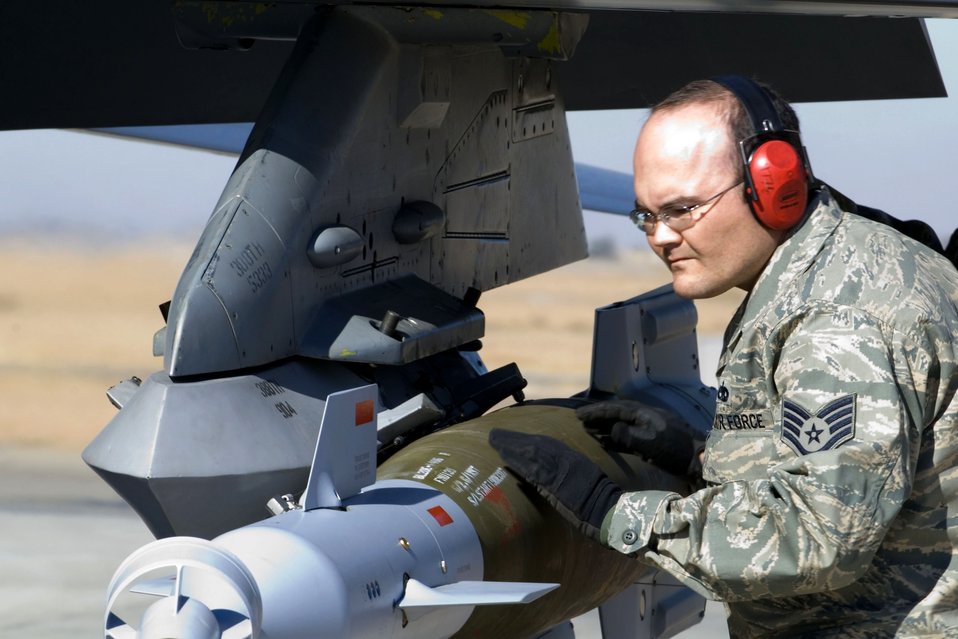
Airmen up in arms

Staff Sgt. Michael Norton inspects a guided bomb unit on an F-16 Fighting Falcon Jan. 16 at Balad Air Base, Iraq. Aircraft are armed prior to taking the runway for takeoff. Sergeant Norton, a 332nd Expeditionary Maintenance Squadron aircraft armament specialist, is deployed from Hill Air Force Base, Utah.